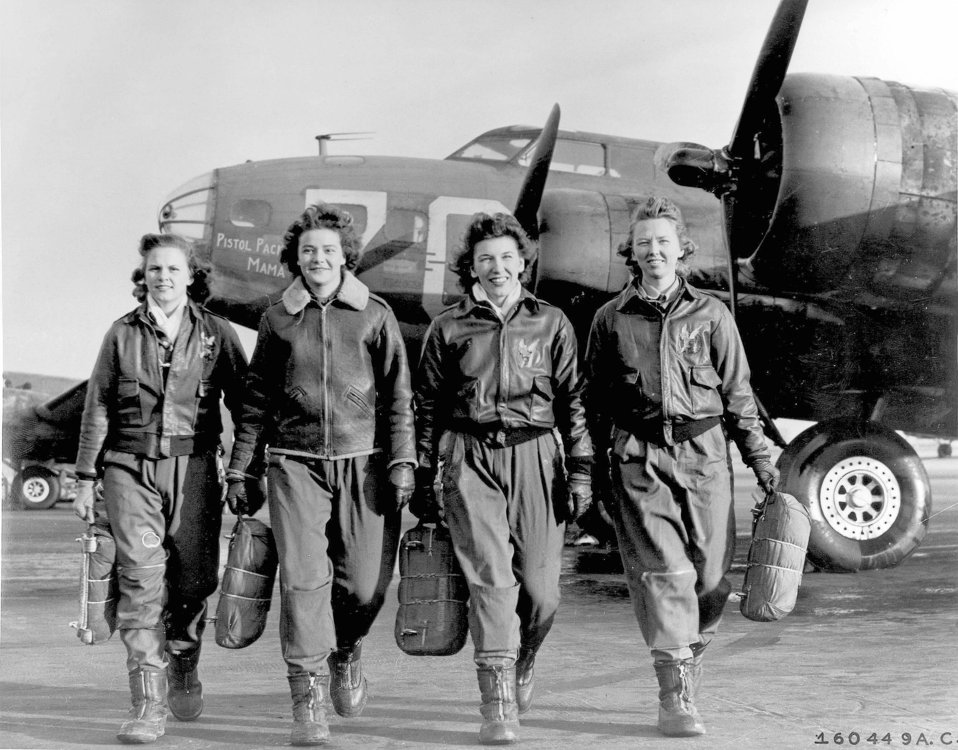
WASP

1940s -- These four female pilots leaving their ship at the four engine school at Lockbourne are members of a group of WASPS who have been trained to ferry the B-17 Flying Fortresses.